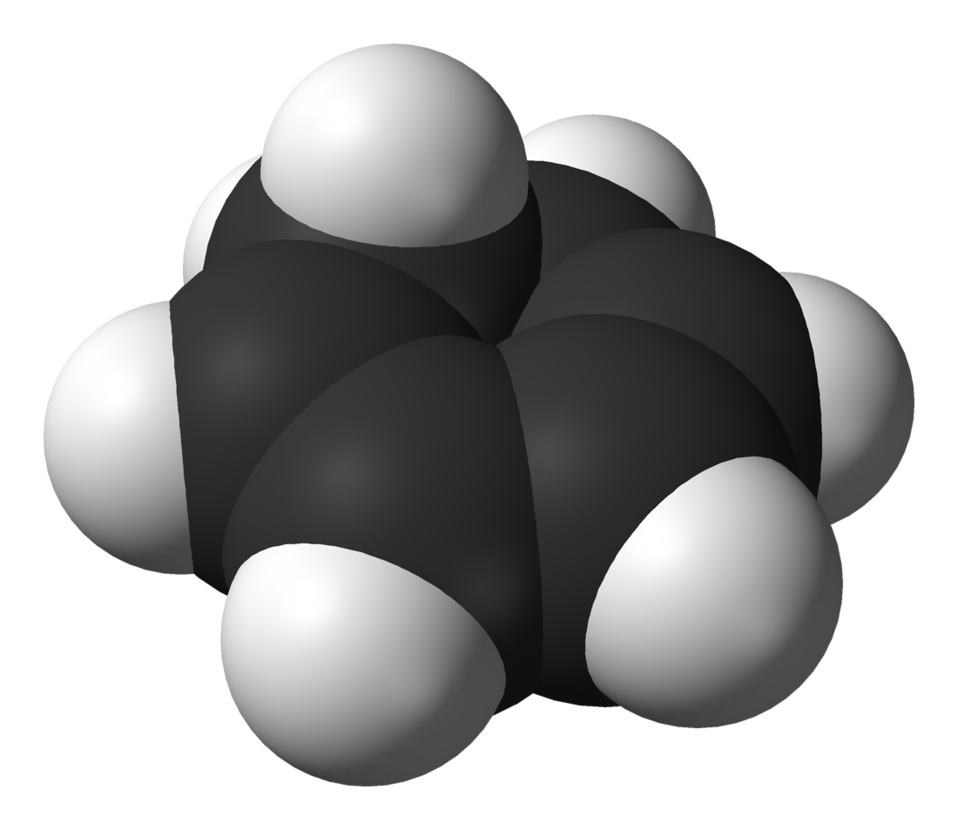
Ball-and-stick model of the 1,3-cyclohexadiene molecule, C6H8. Structure calculated using HF/6-31G* in Spartan '04 Student Edition. Image generated in Accelrys DS Visualizer.